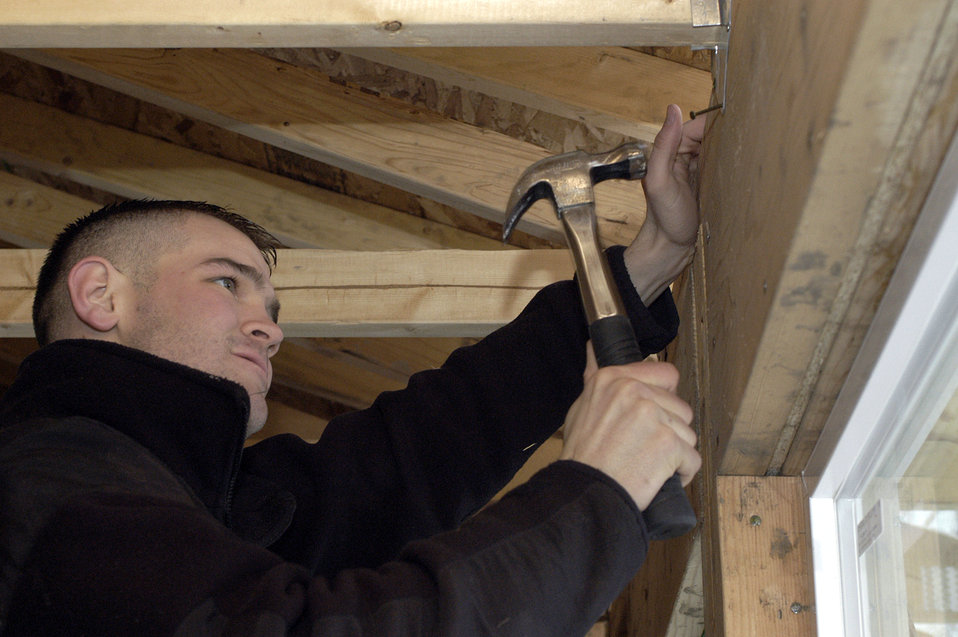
Building dreams

OGDEN, Utah -- Airman 1st Class Brent Contratto nails a beam brace on a new Habitat for Humanity house airmen from nearby Hill Air Force Base are building. Airman Contratto is a line delivery crew chief with the 388th Equipment Maintenance Squadron.